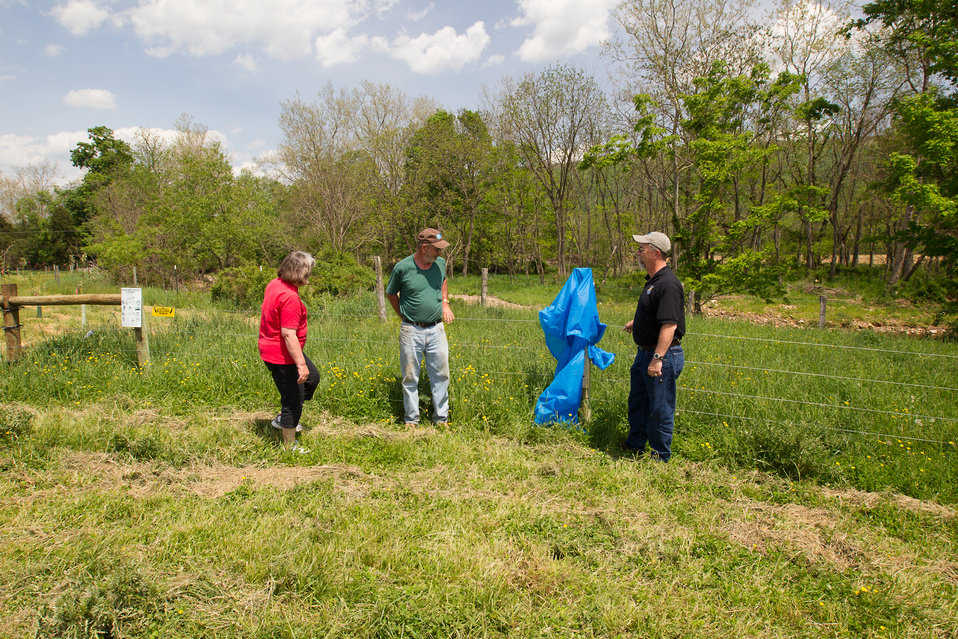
Celebrating 1 Million Feet of Conservation Fence in WV

Partners for Fish and Wildlife Program